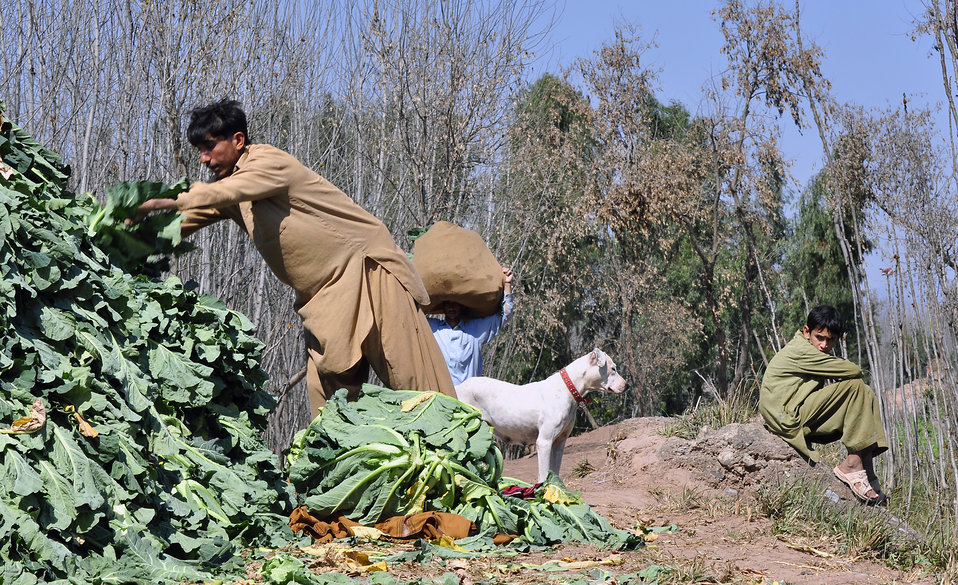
2011 March: USAID's Agricultural Recovery Program in 22 districts of Khyber Pakhtunkhwa, Punjab and Balochistan is an excellent example of the impact US development assistance can have. We have helped more than 500,000 farmers salvage the winter planting season and livestock after the floods. As a result, wheat farmers have nearly doubled their harvests. More than 5 million people have benefited. These photos show progress of the USAID Agricultural Recovery Project in Khyber Pakhtunkhwa.